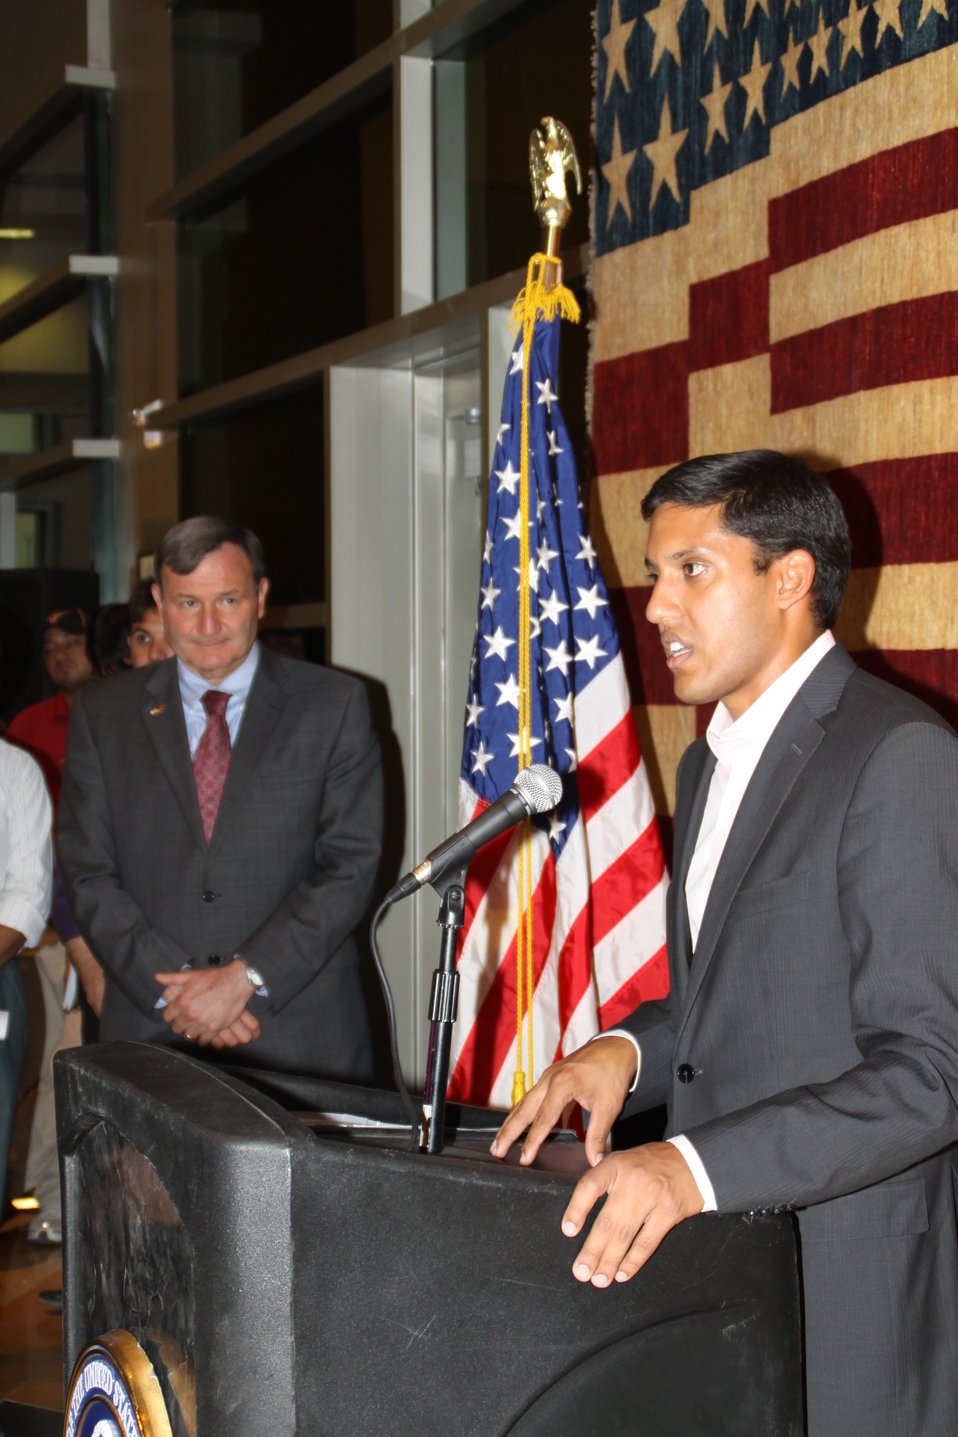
US Embassy Town Hall July 21, 2010

Dr Rajiv Shah addresses the crowd at a Town Hall with Ambassador Eikenberry looking on.